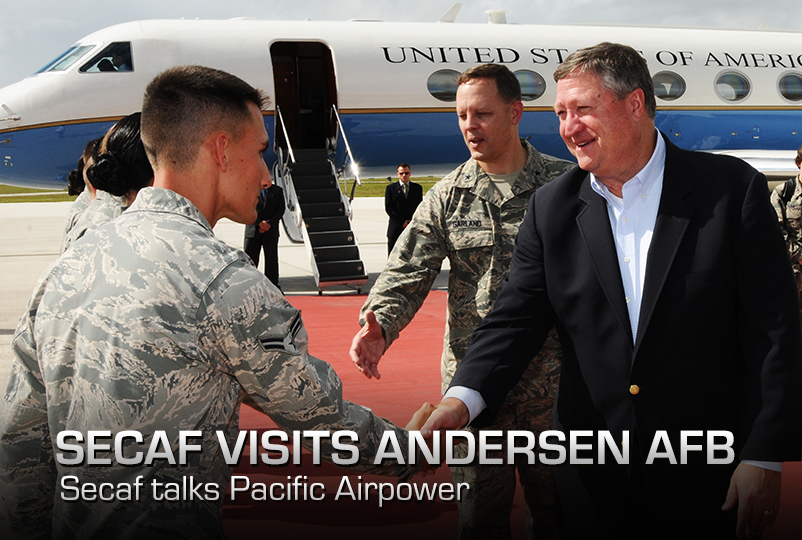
SECAF visits Andersen AFB